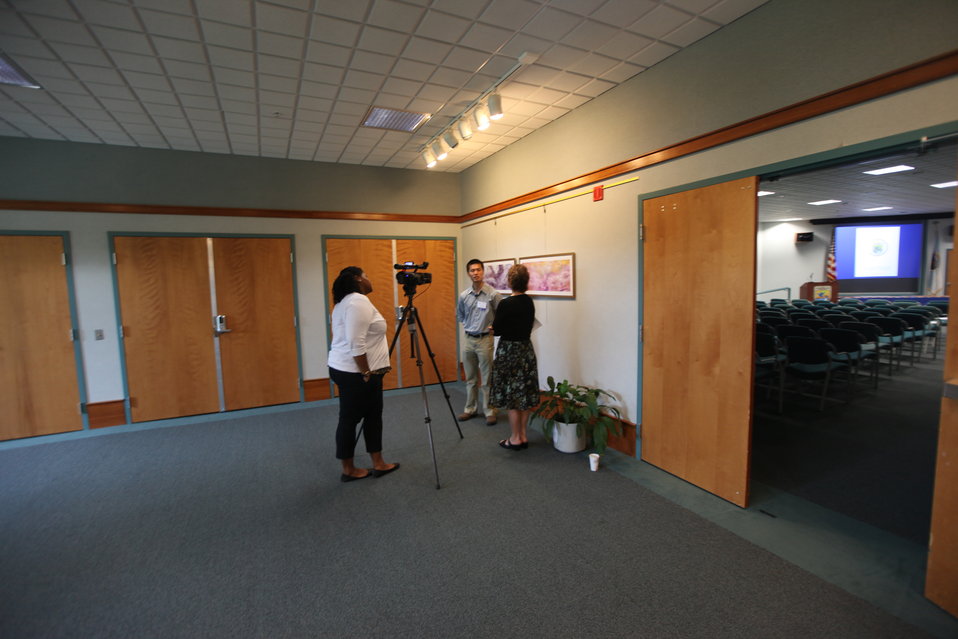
Northeast Region Employee Appreciation Awards